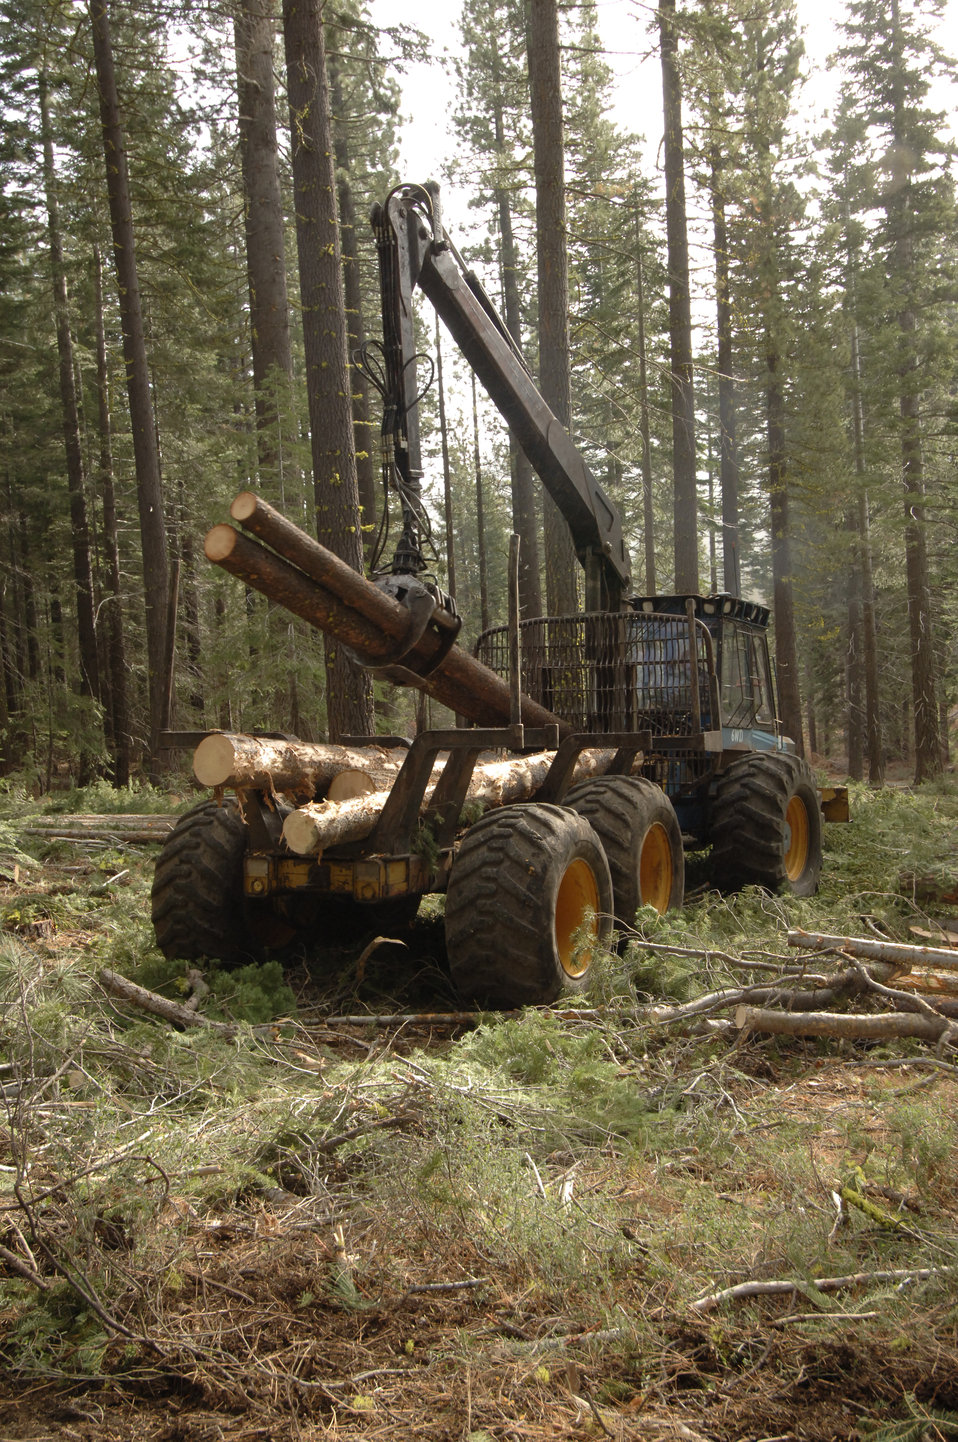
The U.S. Department of Agriculture (USDA) Forest Service (FS) is strongly committed to the management of the National Forests in an environmentally sound manner. The agency's top priority is to maintain and improve the health, diversity, and productivity of forest ecosystems for the enjoyment of current and future generations. Forest management includes guidance, administration, and support of the agency's forest products management and sales programs. Forest products include materials derived from a forest for commercial use such as lumber and paper, and also 'special forest products' such as medicinal herbs, fungi, edible fruits and nuts, and other natural products.